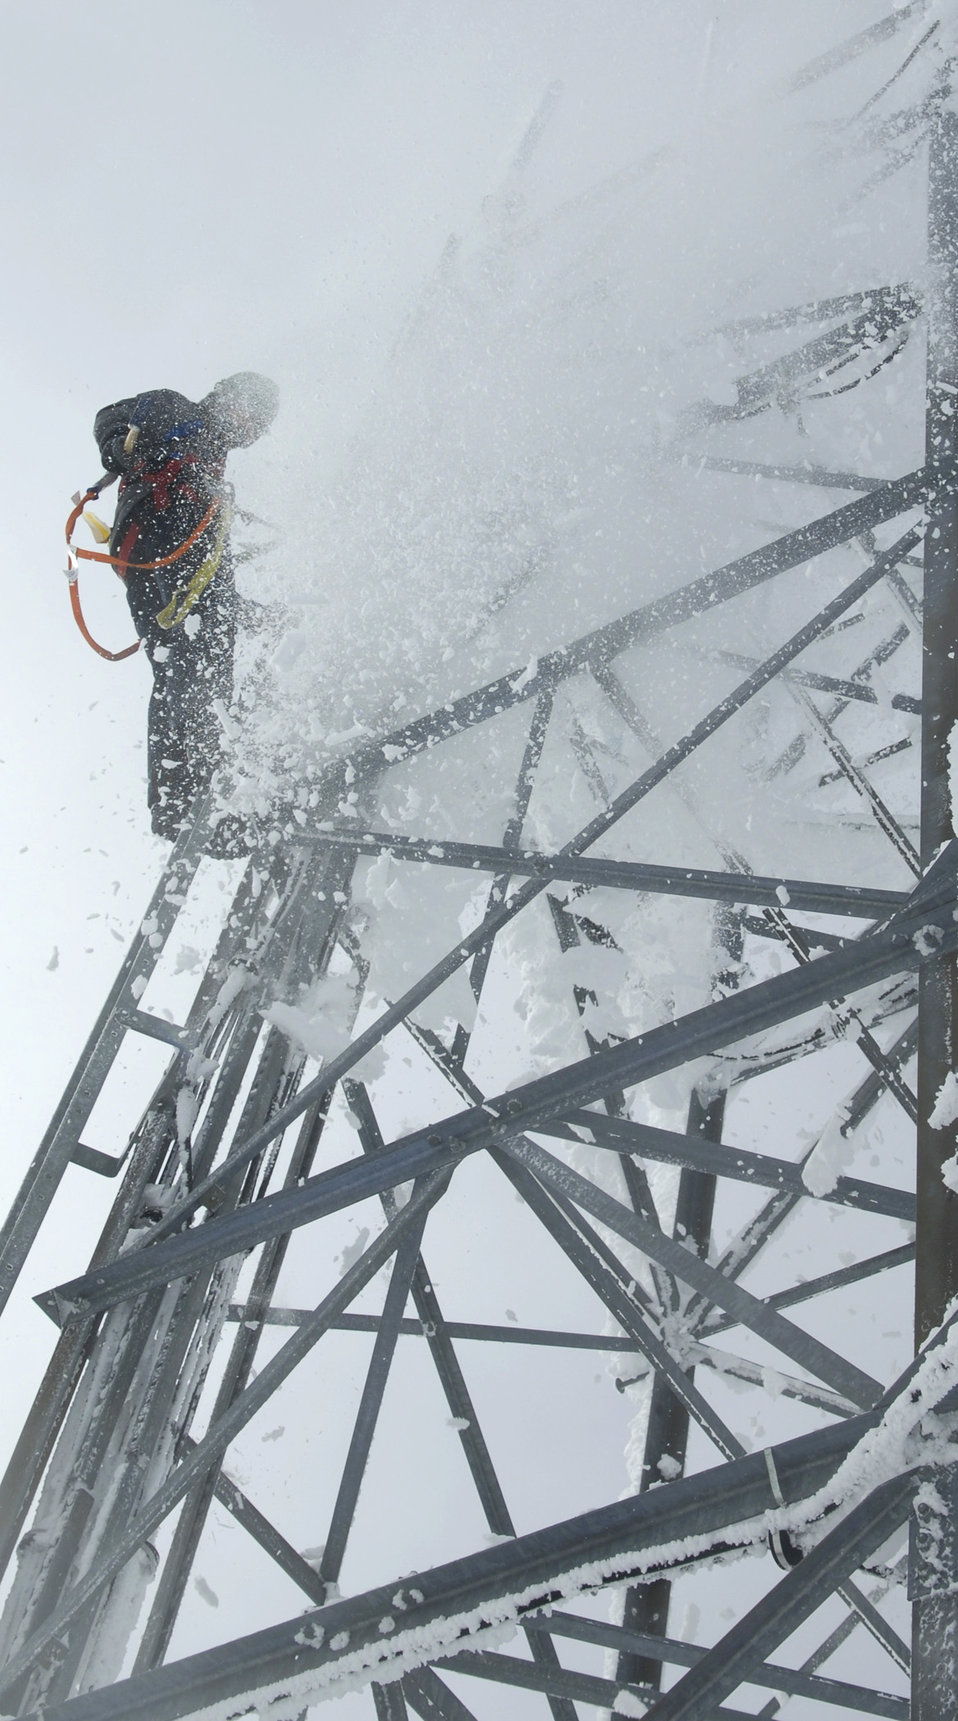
Fairchild Airmen climb ice-covered tower to retain communications

Airman 1st Class Miklos Jeszensky knocks snow and ice off a radio tower Feb. 16, 2011, on the Calispell Mountain Peak in Cusick, Wash. Airman Jeszensky is a transmission systems radio technician with the 92nd Communications Squadron at Fairchild Air Force Base, Wash., and is knocking ice of the tower to clear radio signals for the 336th Training Group and local law enforcement. Clearing this enables the 336th TRG to continue training for Survival, Evasion, and Resistance and Escape School students and accomplish rescues.